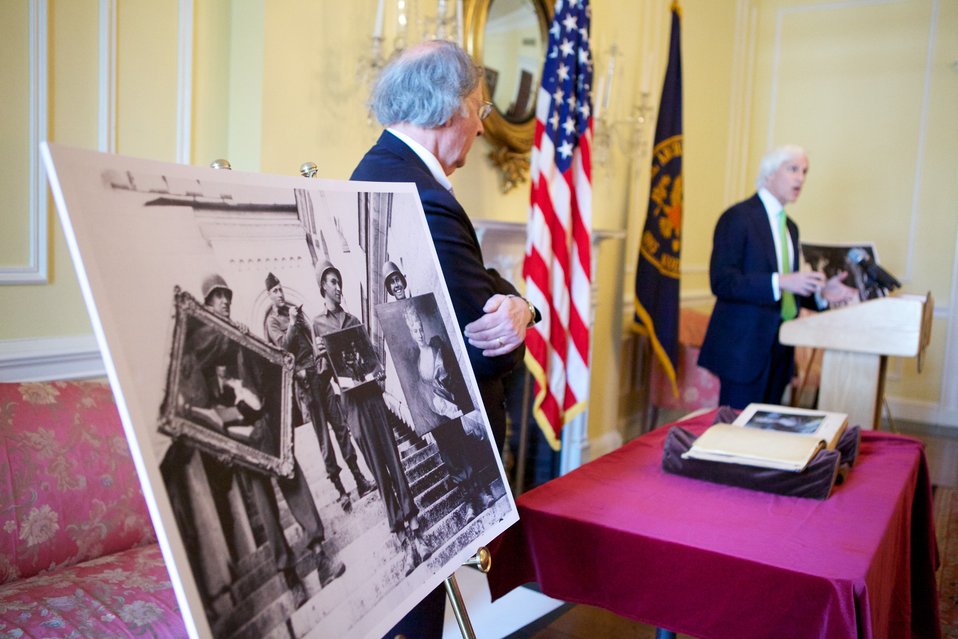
Hitler Album Donation Event